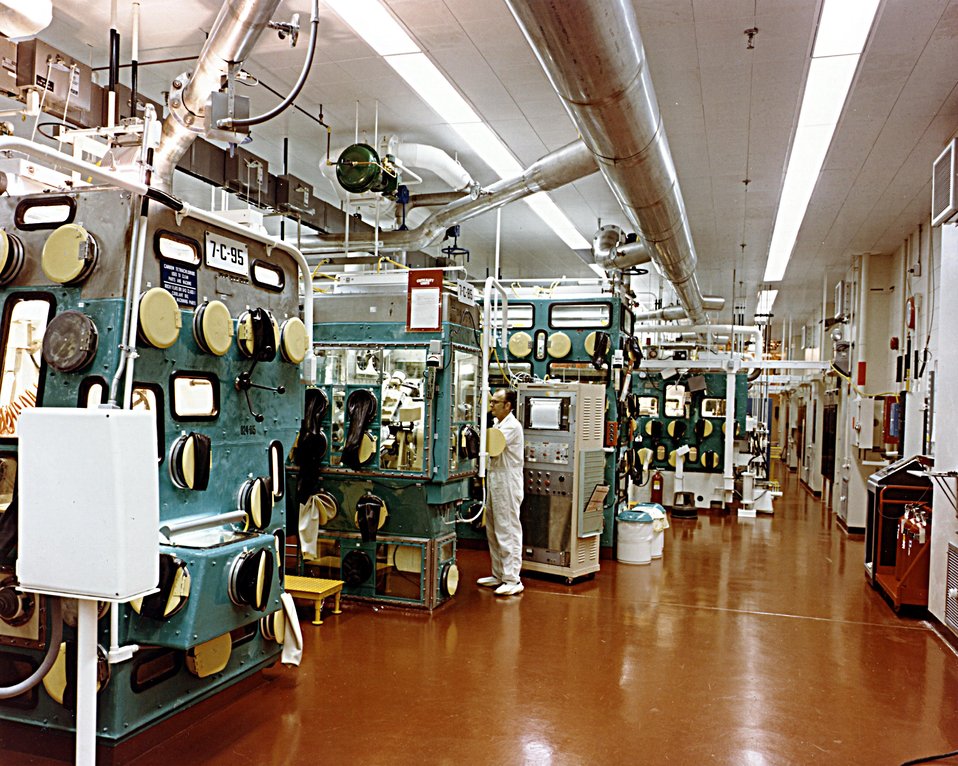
TRAINED PERSONNEL INSPECT COMPONENT QUALITY USING THESE GLOVE BOXES IN BUILDING 707, MODULE C.

ALL PLUTONIUM OPERATIONS AT THE PLANT ARE CARRIED OUT IN HIGHLY SPECIALIZED FACILITIES, PROTECTING THE EMPLOYEES AND THE SURROUNDING POPULATION AND ENVIRONMENT.